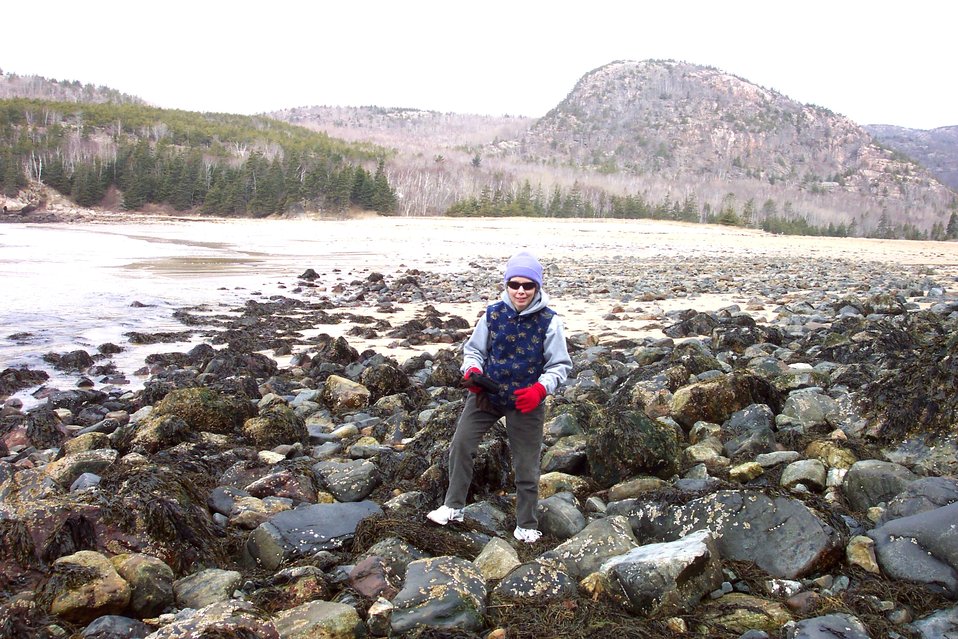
Tide-pooling and rock hopping on the eastern side of Sand Beach.